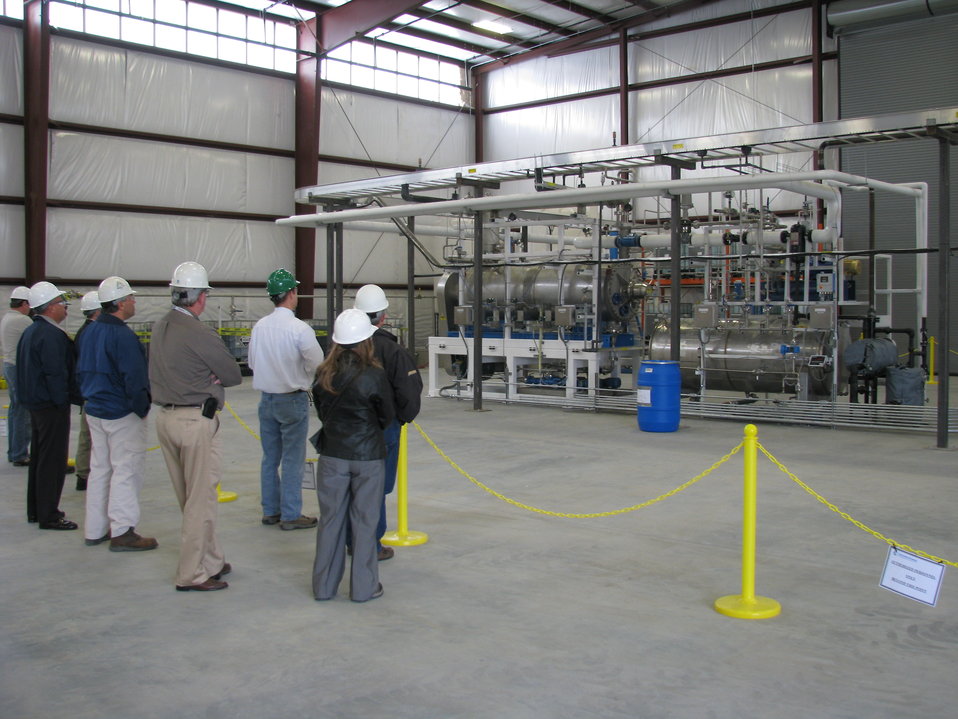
Technology to Provide Portable Option for At-Tank Volume Reduction of Hanford Waste

With the help of Recovery Act funding, the Office of River Protection is developing the Wiped Film Evaporator, a new technology offering a portable option for at-tank volume reduction of waste.